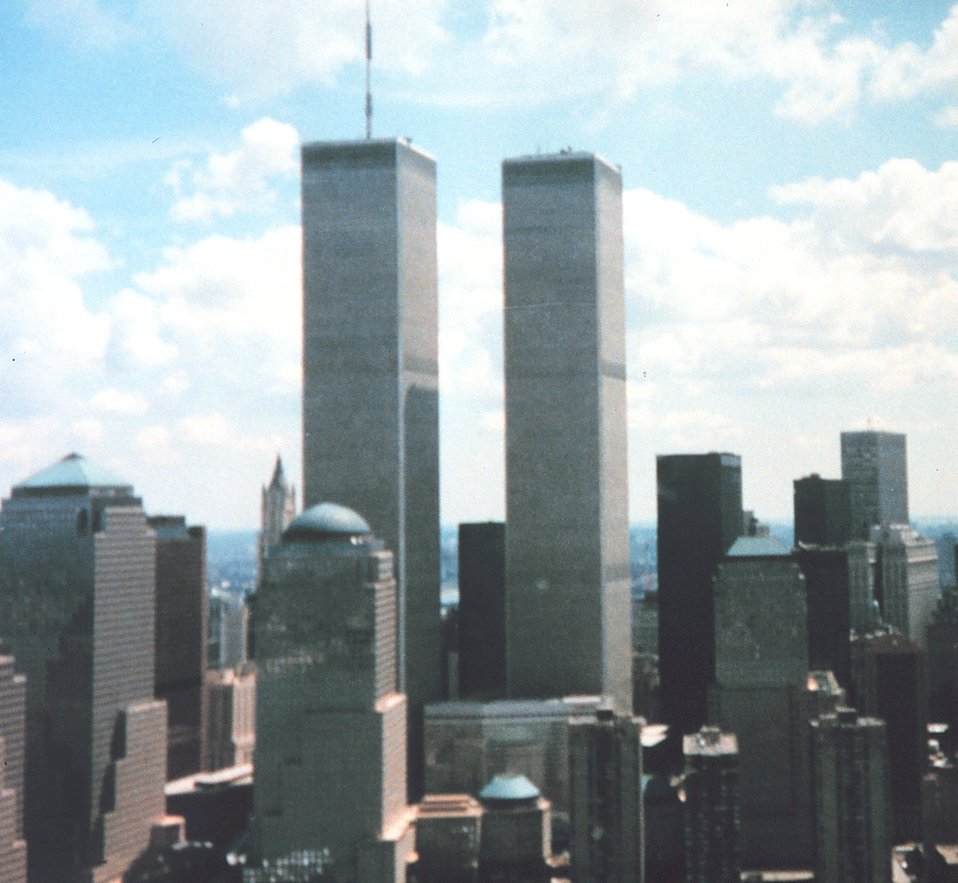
World Trade Center at New York during transit between SHOALS Lidar survey sites.